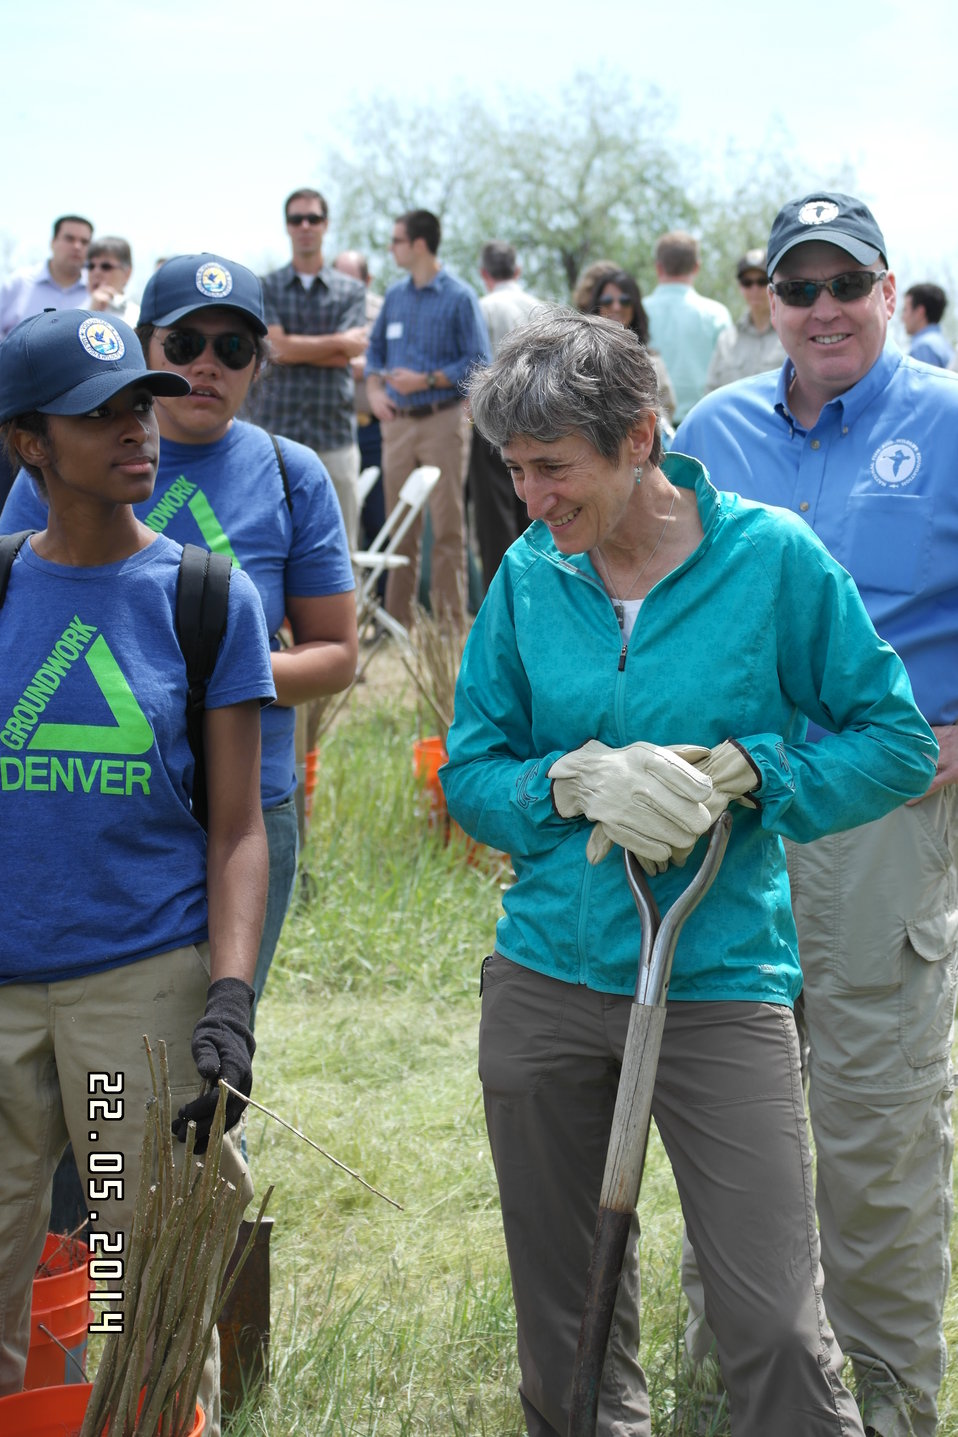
Secretary Jewell Announces $6.7 for Youth Conservation Job

Interior Secretary Sally Jewell helps local youth conservation groups plant cottonwood trees at Rocky Mountain Arsenal National Wildlife Refuge.